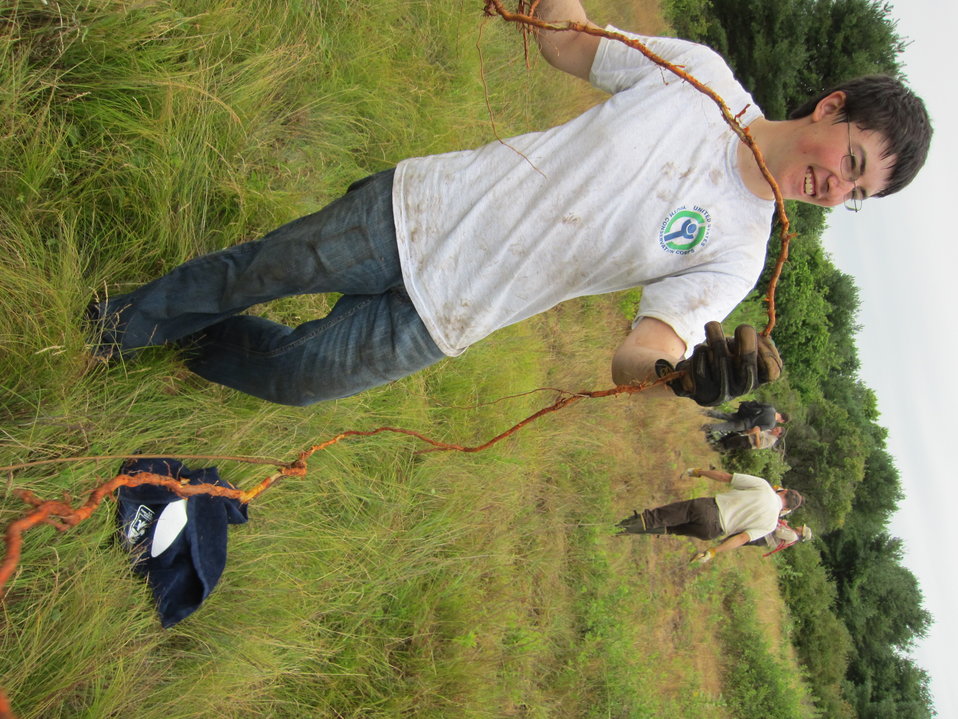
Get Your Goose On!

Longest root pulled = 16'9''